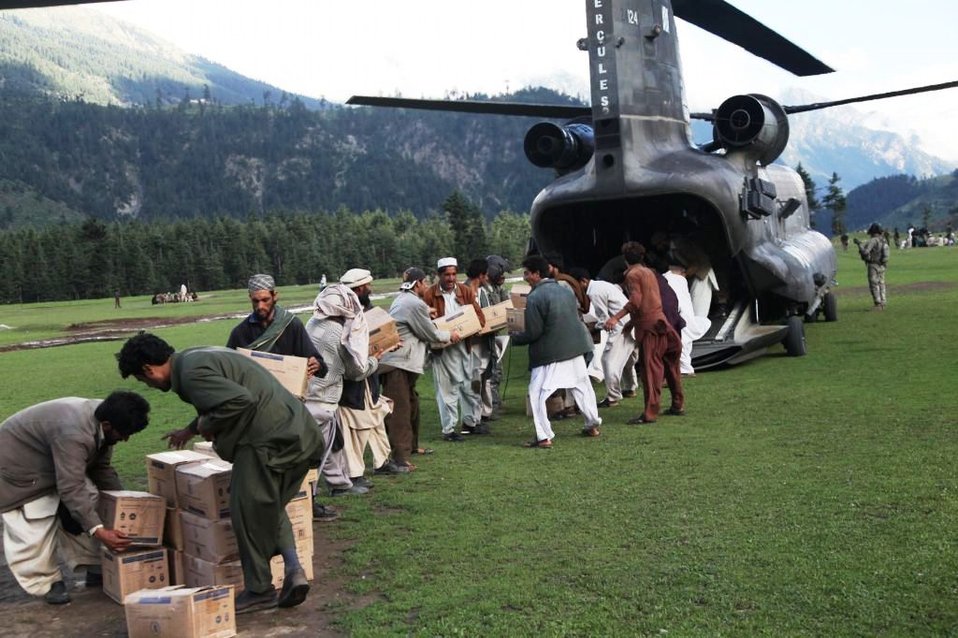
Men from Kalam Form a Chain To Unload a Helicopter

Men from the town of Kalam form a chain to quickly unload a U.S. Army Chinook helicopter that has delivered humanitarian assistance and pick up victims of the flood in Khyber Pakhtunkhwa province, Pakistan, on August 10, 2010.